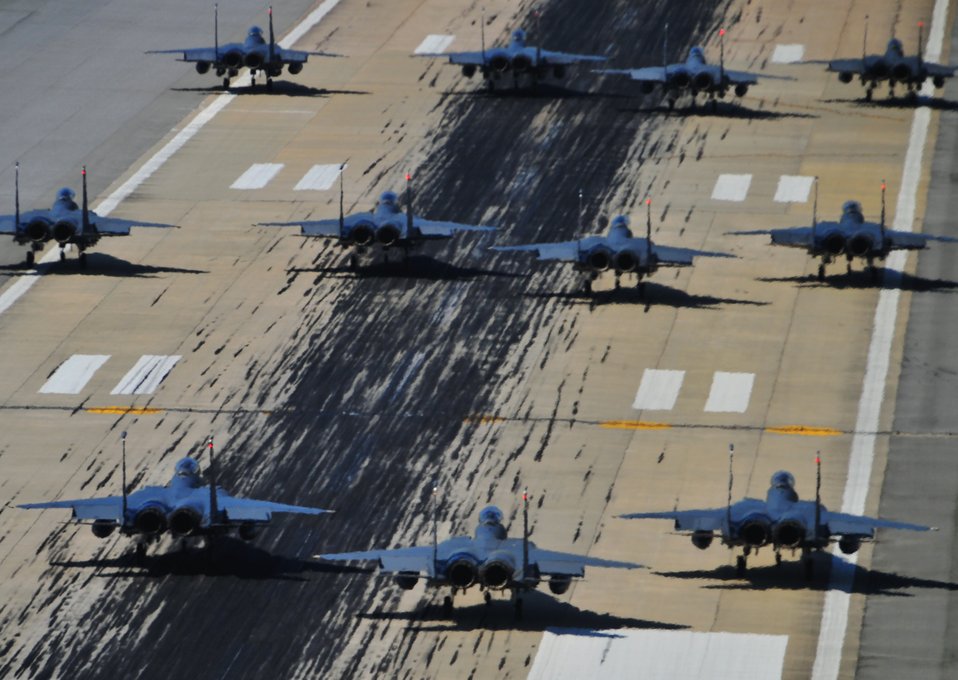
Mustang Mayhem

F-15E Strike Eagles of the 4th Fighter Wing perform an